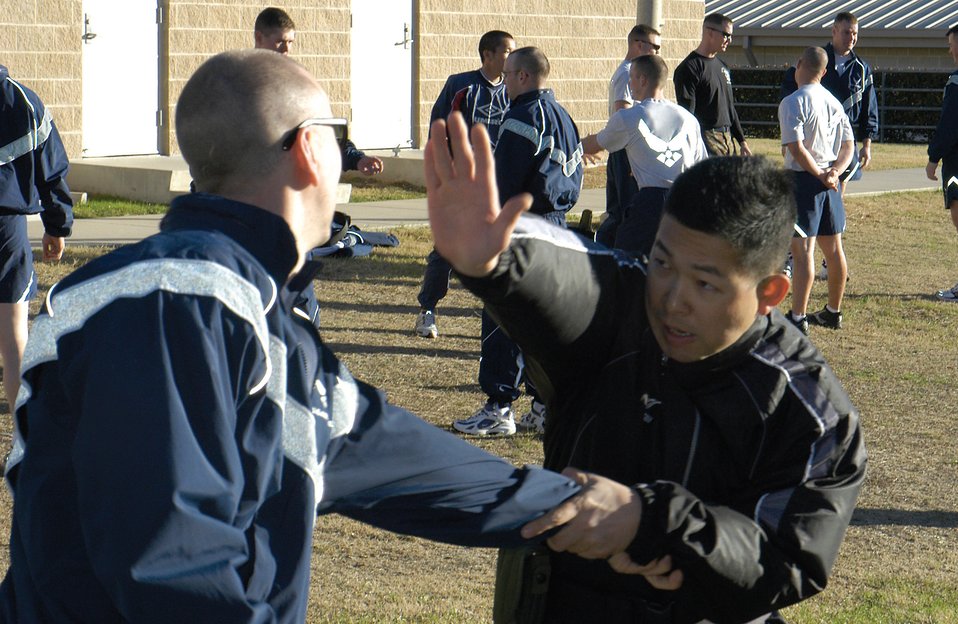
Japanese officers

LACKLAND AIR FORCE BASE, Texas (AFPN) -- Japanese officer Maj. Nobukatsu Kishiura practices escaping from a